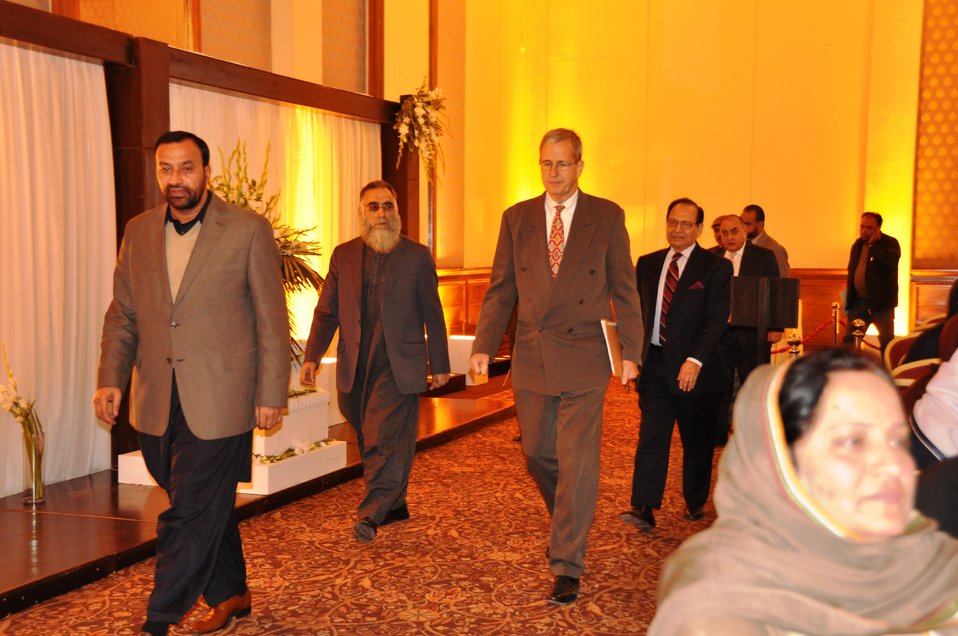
USAID's Mission Director Jock Conly along with the Minister of Education Governmnet of AJK